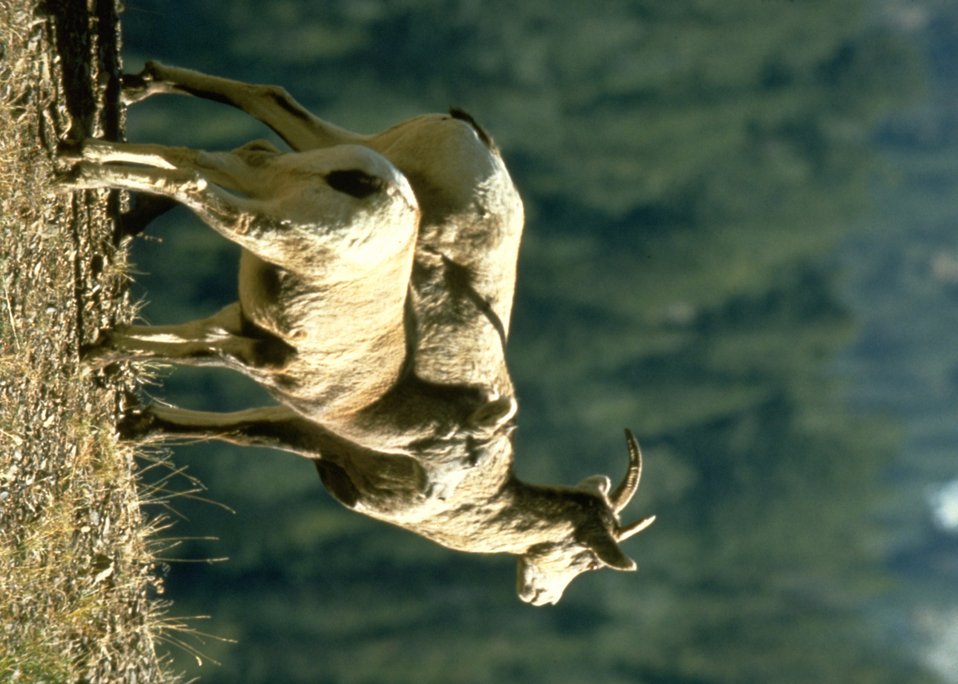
Desert big horn sheep.